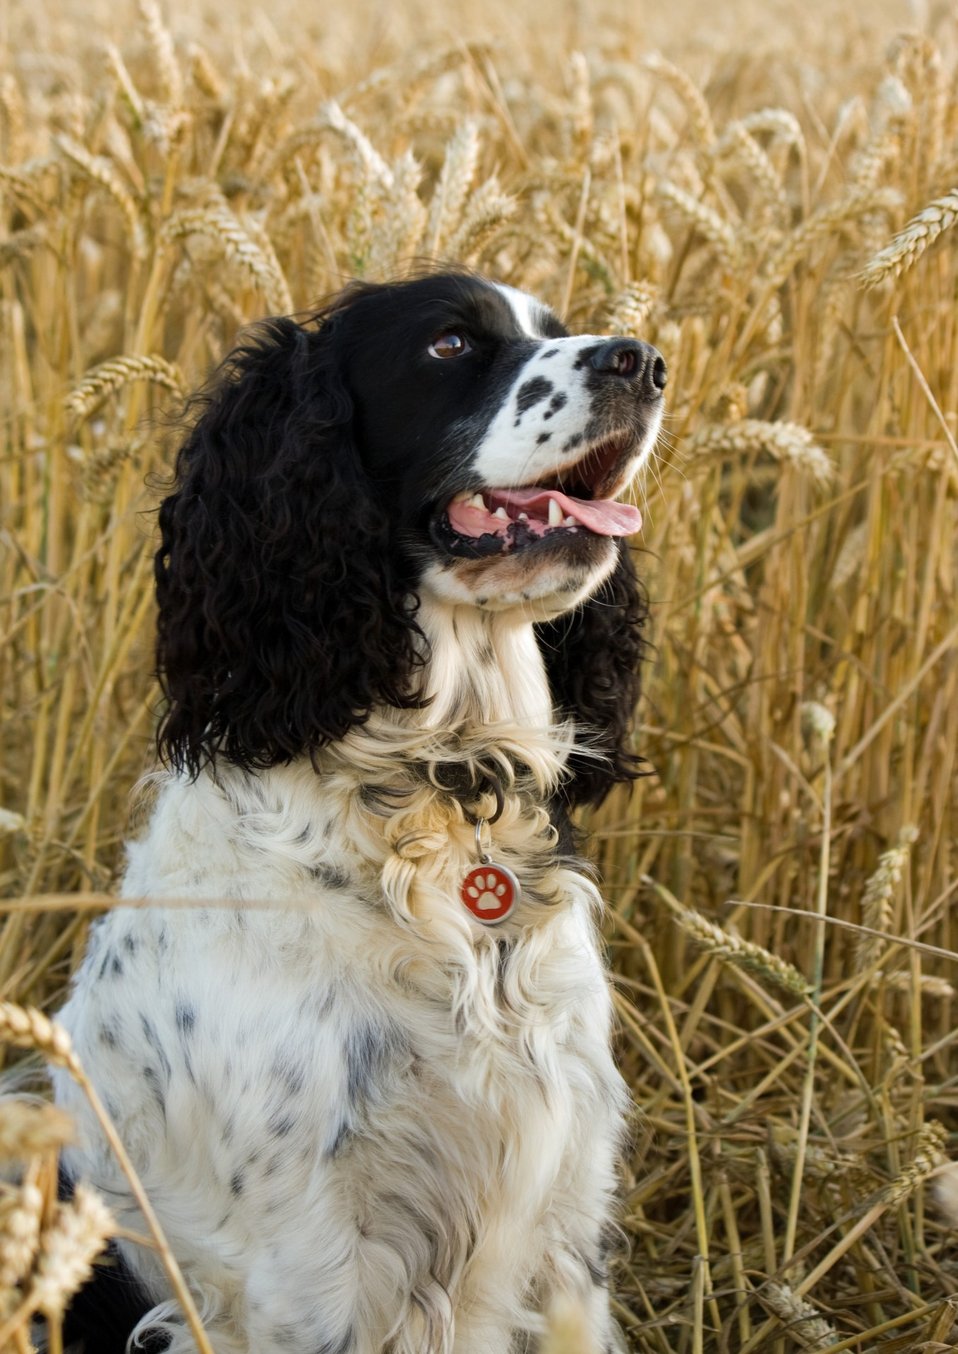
Dog

Portrait of an intelligent, alert english springer spaniel in the golden wheat field.